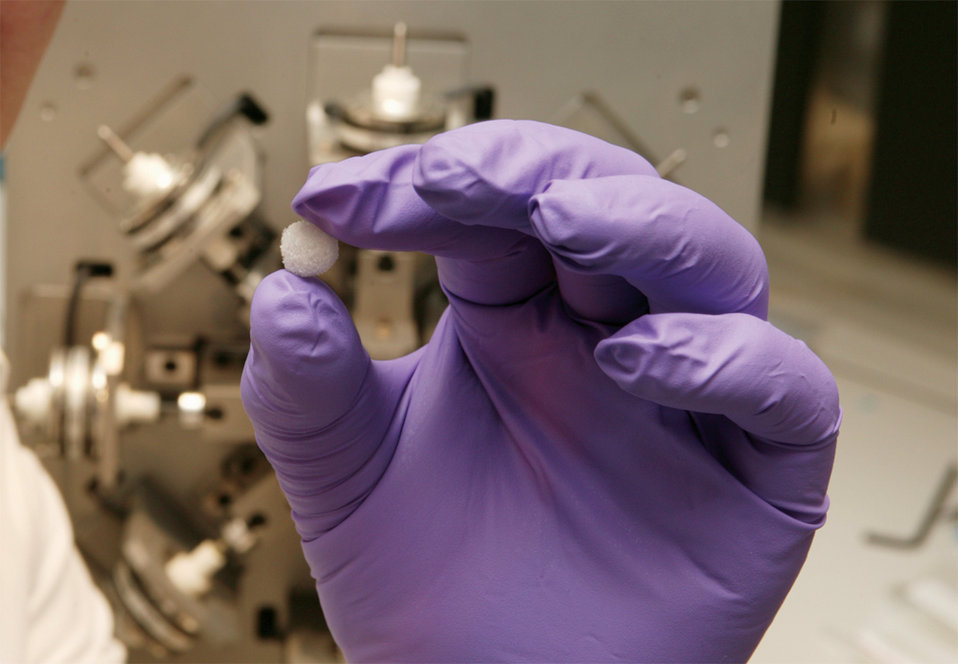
Key to Lawrence Livermore National Laboratory shape-memory-polymer (SMP) foam technology is its compressibility. A 10- millimeter-diameter spherical SMP foam plug is shown in its primary (original) shape.

A Livermore team has developed an alternative treatment that isolates an aneurysm from the rest of the vascular system with one implanted device - a 'plug' make from shape memory-polymer (SMP) foam.